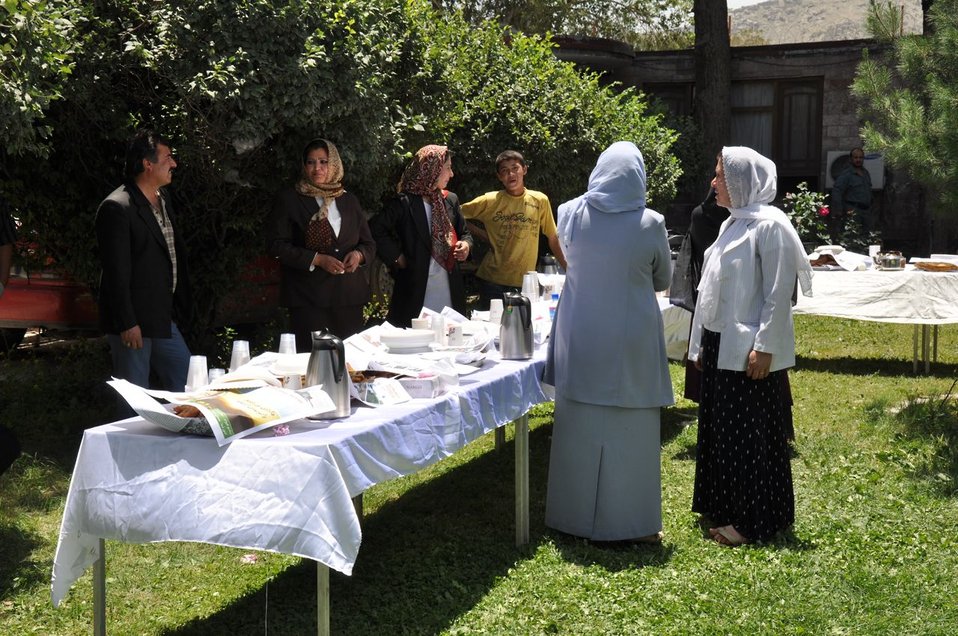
Mother's Day in Afghanistan

Mother's Day lunch is set up for the women after the program at the Ministry.